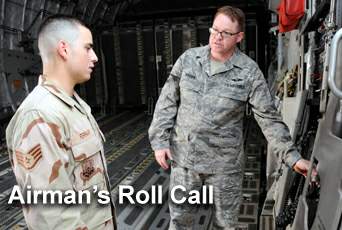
Airman's Roll Call

This week's Airman's Roll Call focuses on the Air Force mentoring program.